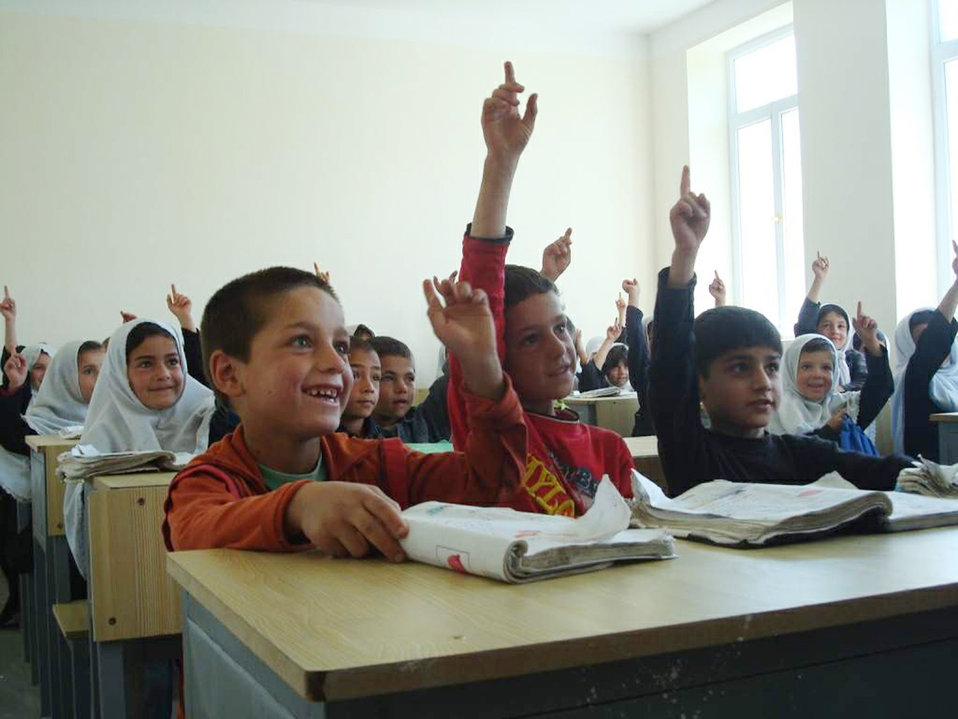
American servicemembers, Afghan leaders celebrate girls' school opening

First graders at the newly-opened Provincial Reconstruction Team Panjshir-funded Haish Saidqi Girls' School answer questions about what they want to be when they grow up June 23 in the Panjshir Province, Afghanistan. Although officially a girls' school, a small number of boys attend as well. The school will serve more than 500 girls from nearby villages.